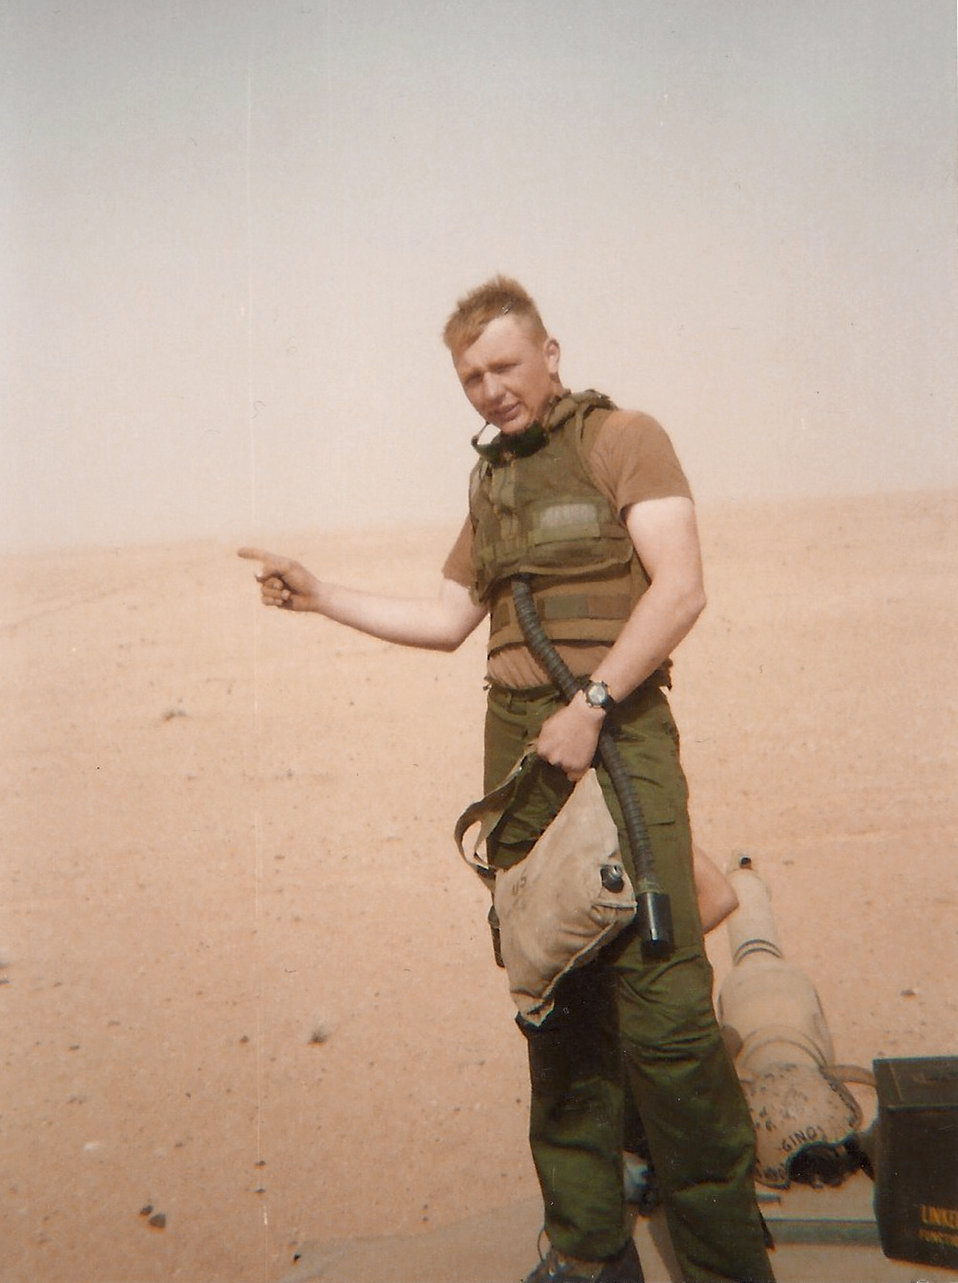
Airman's career spans two services, two wars

Army Private 1st Class Roy Bentley in Saudi Arabia in 1991 during Operation Desert Storm. Maj. Roy Bentley is now a C-17 Globemaster pilot deployed to Manas Air Base, Kyrgyzstan.